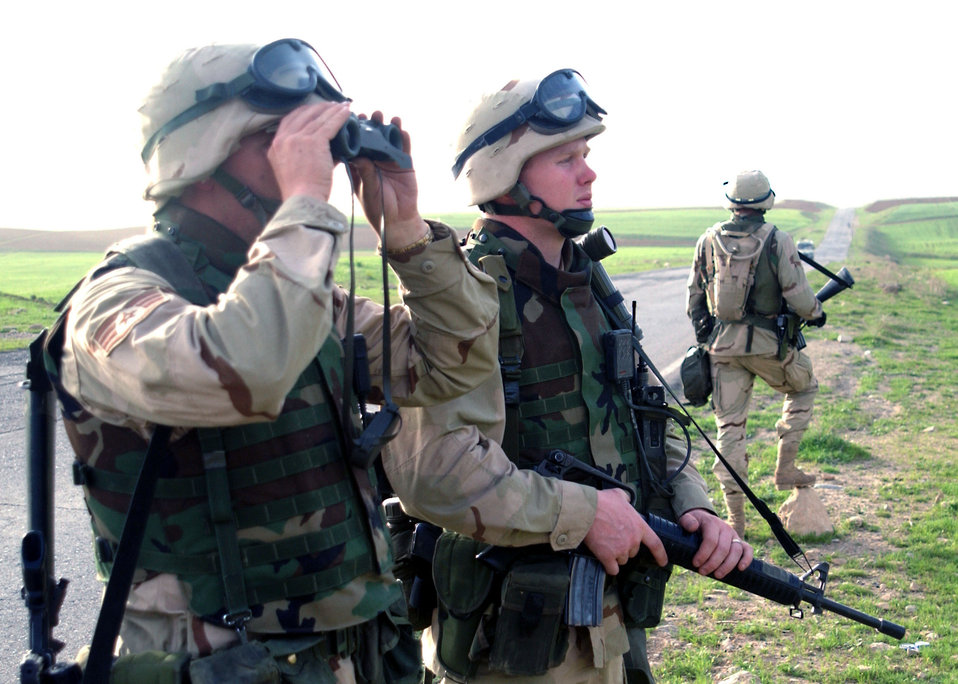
Scanning the ridgeline

OPERATION IRAQI FREEDOM -- Staff Sgt. Jason Fields (left) and Staff Sgt. Ryan Ziemer, 100th Security Forces Squadron, Royal Air Force Mildenhall, England, scan the nearby ridgeline April 9, in support of Operation Iraqi Freedom.